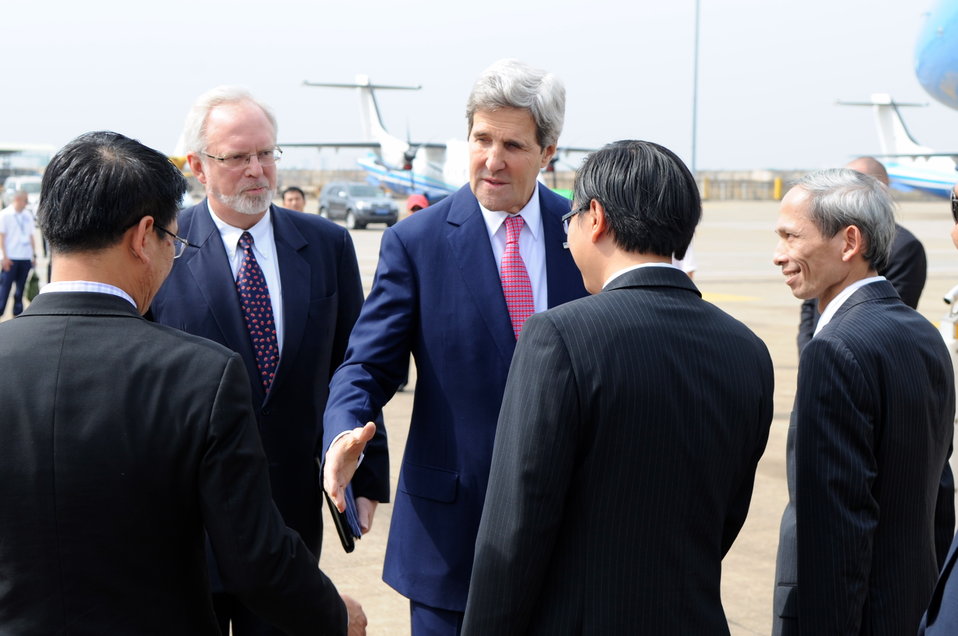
Secretary Kerry Greets Government Officials Upon Arrival in Vietnam

U.S. Secretary of State John Kerry, flanked by U.S. Ambassador David Shear, says hello to Vietnamese government officials upon his arrival in Ho Chi Minh City on December 14, 2013.